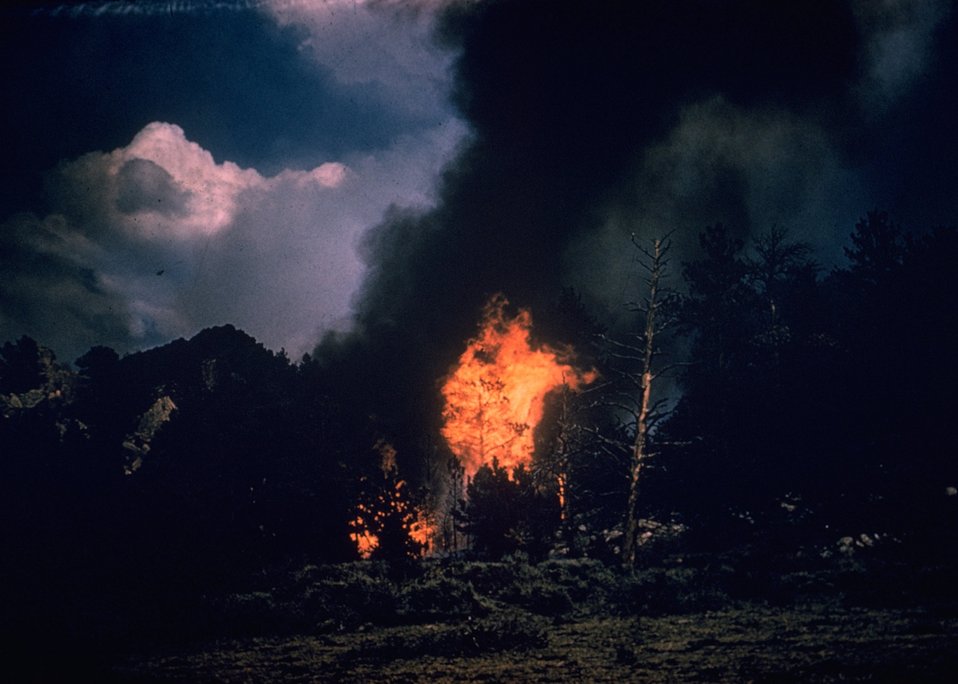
A wildfire in a unknown forest area.